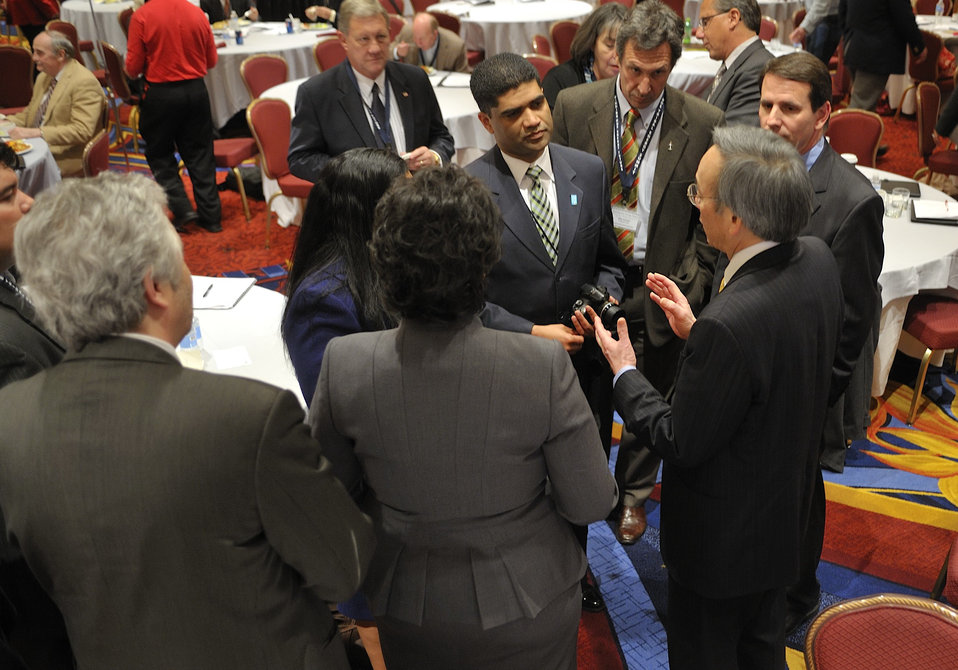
Tribal Energy Summit

Secretary Chu discussing Campo Band of Kumeyaay success in wind power development.